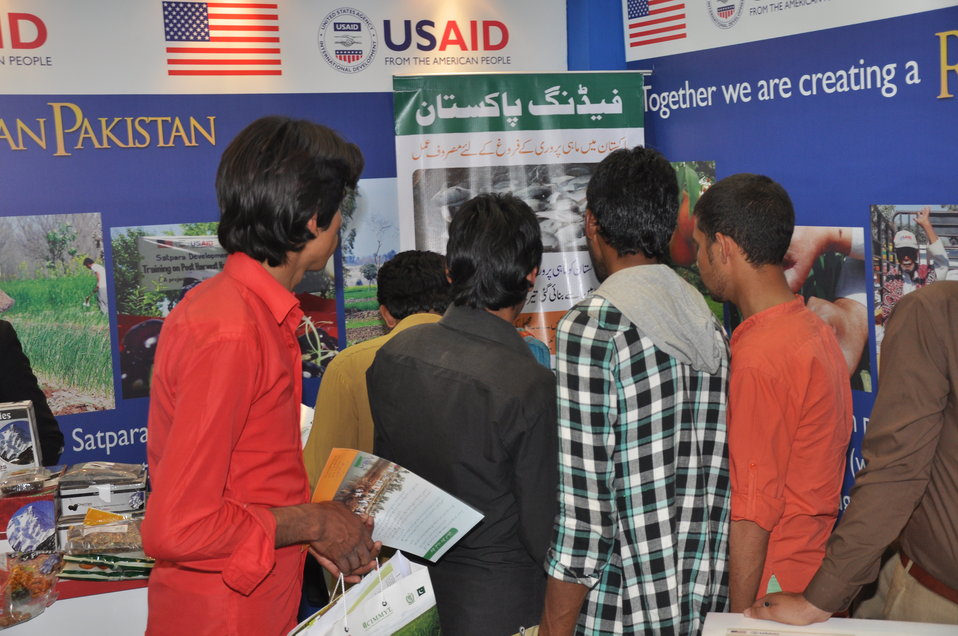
FEEDing Pakistan (Promoting Aquaculure Sector)

A large group of general public including Agriculture Farmers, few fish farmers and young entrepreneurs visited booth and were educated about the benefit of Tilapia Culture and Soy-based feed .